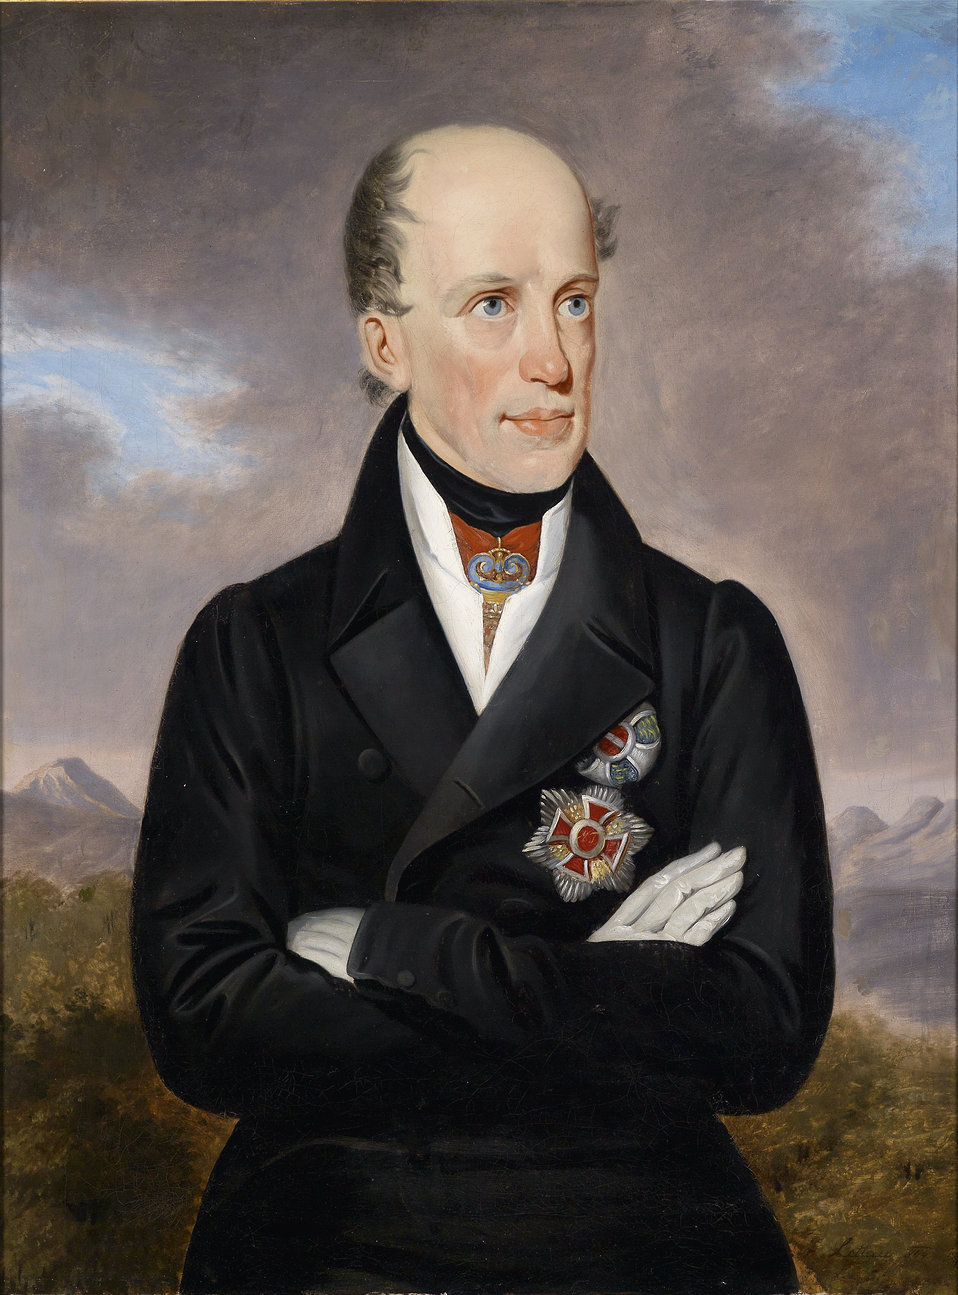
Erzherzog Johann 1844